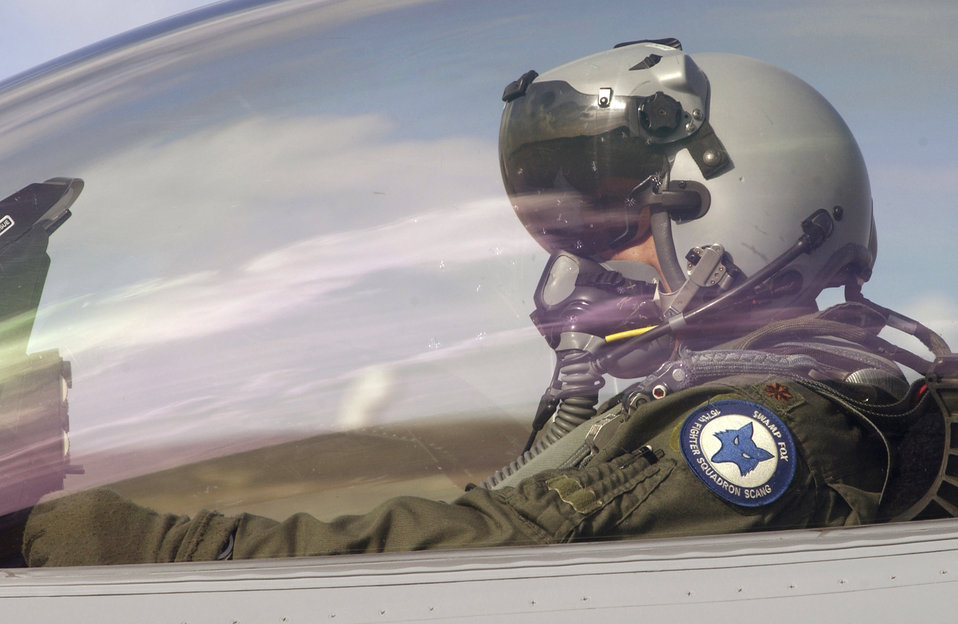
South Carolina Air Guard trains at Kadena

Maj. Abu Ghandi prepares to take off from Kadena Air Base, Japan, Sept. 11. Twelve aircraft and more than 300 Airmen from the South Carolina Air National Guard's 157th Fighter Squadron are deployed to Kadena to conduct theater orientation training. Major Ghandi is an F-16 Fighting Falcon pilot assigned to the 157th FS.